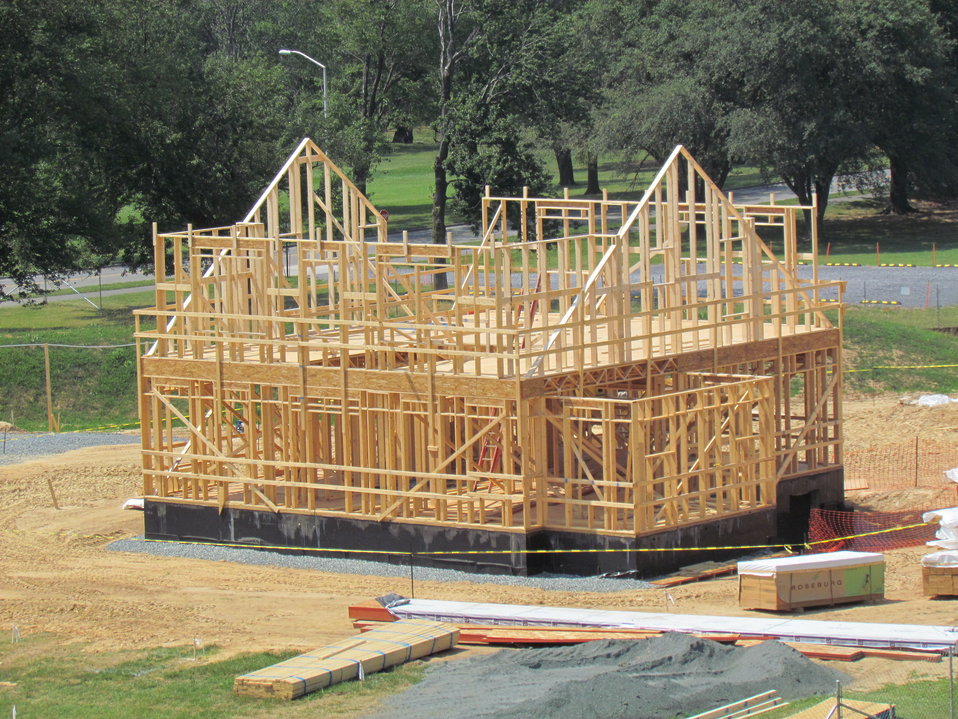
Net-Zero Energy Residential Test Facility - Progress picture of second floor framing.